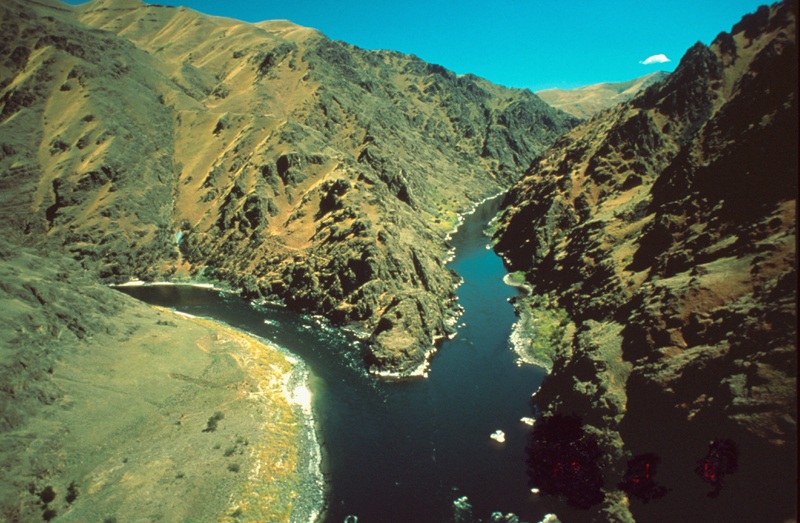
Confluence of Salmon and Snake River Lower Salmon River Cottonwood Field Office UCSC Upper Columbia Salmon Clearwater District